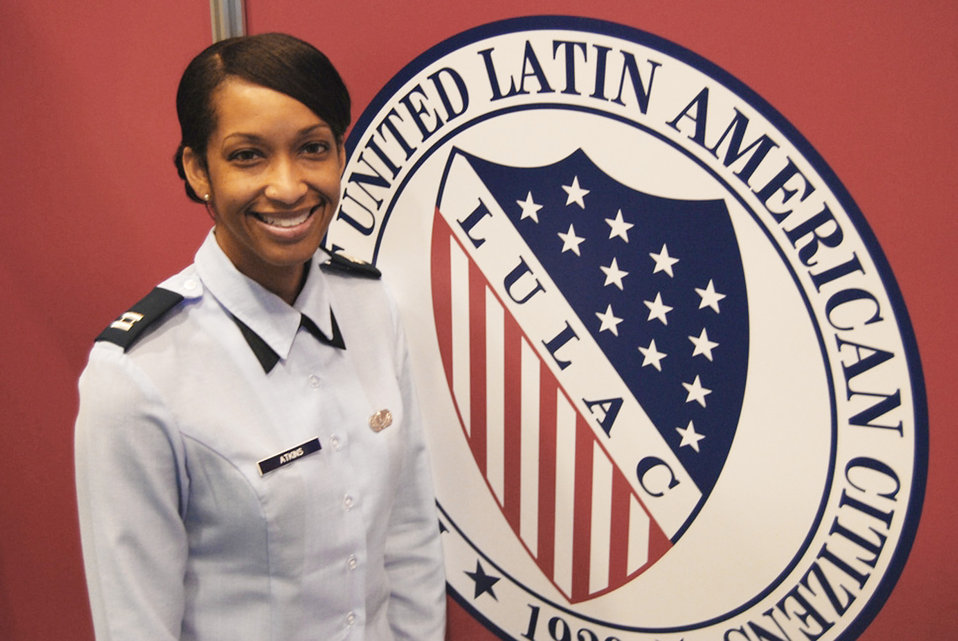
Human Resources Develop Council reaches out to community at LULAC

Capt. Joy Atkins stands at the League of United Latin American Citizens logo July 17 at the LULAC convention and exposition in San Juan, Puerto Rico. LULAC is the oldest Hispanic civil rights organization in the U.S. Captain Atkins is a Human Resources Development Council member assigned to the 459th Air Refueling Wing at Andrews Air Force Base, Md.